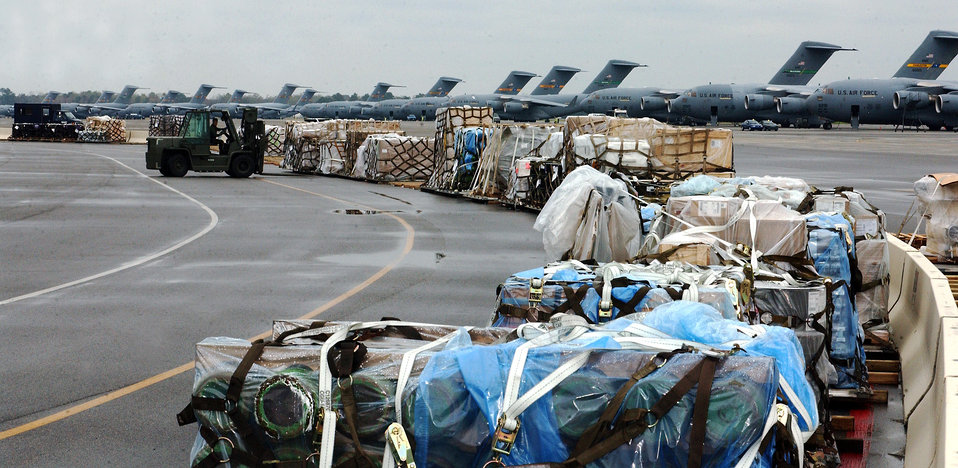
Operation Enduring Freedom supplies

OPERATION ENDURING FREEDOM -- Numerous cargo pallets wait on the flightline of the 437th Aerial Port Squadron at Charleston Air Force Base, South Carolina, for air transport on military and commercial cargo planes supporting Operation Enduring Freedom March 18.